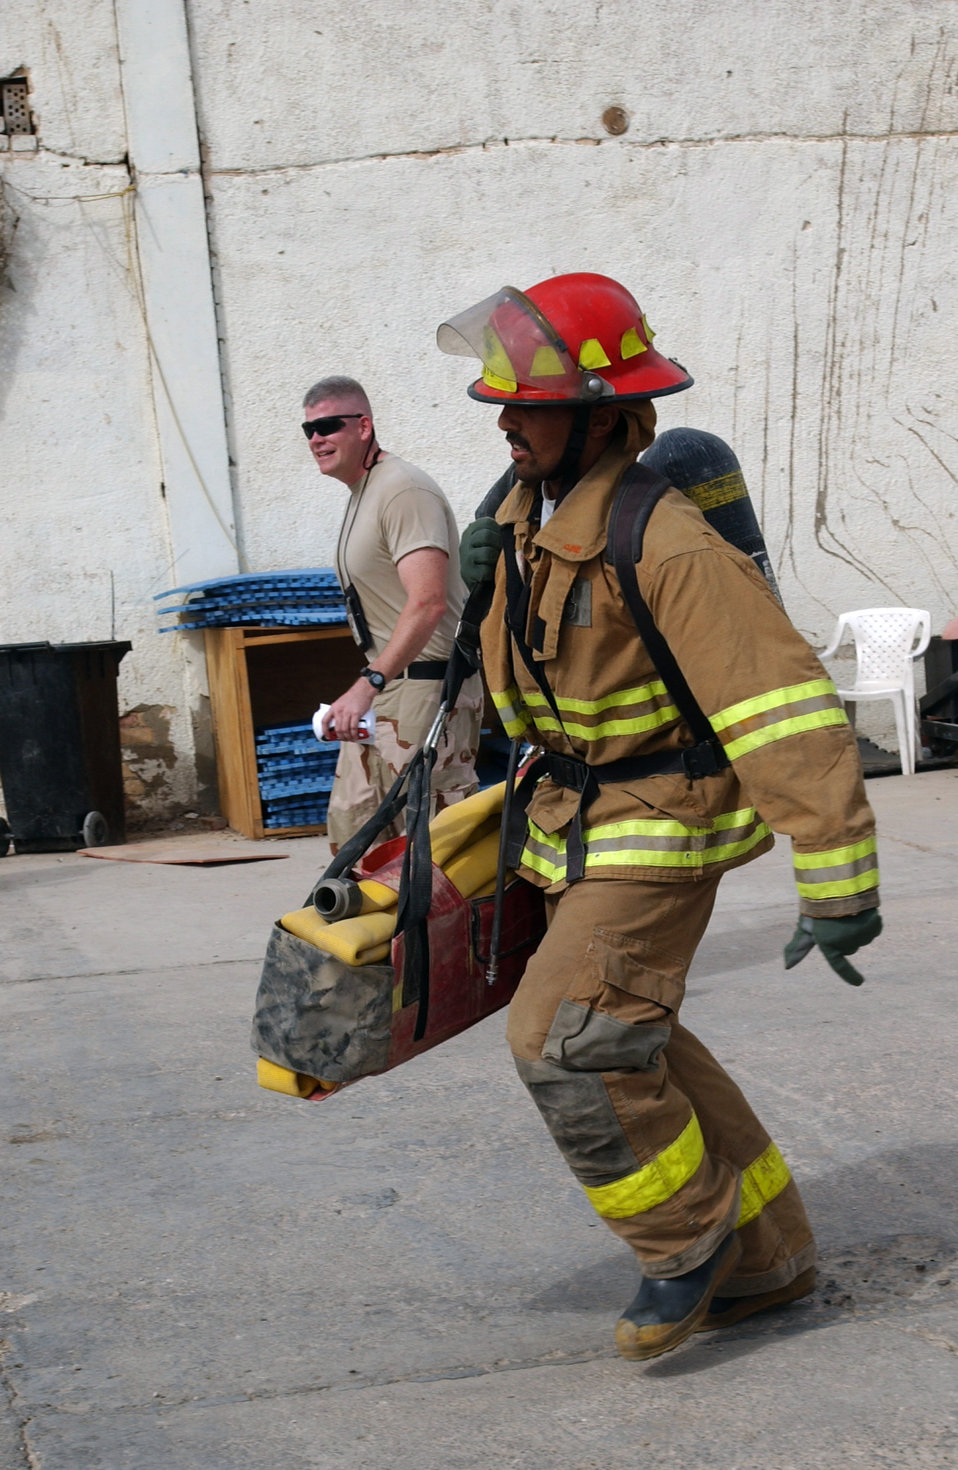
Air Force firefighters teach Iraqis blaze fighting basics

An Iraqi firefighter runs across a parking lot with an equipment bag while Staff Sgt. Joshua Wilson follows along side cheering him on during a fire training confidence course Nov. 12. Iraqi firefighters from Al Nasariya completed a 6-week basic firefighting skills course taught by 407th Expeditionary Civil Engineer Squadron's fire and emergency services flight firefighters.